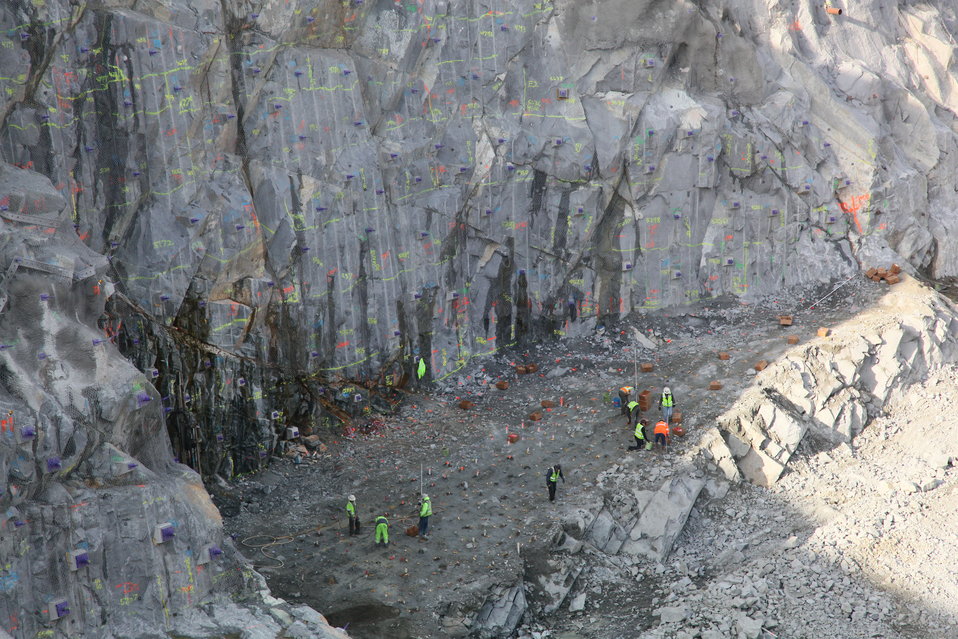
Setting blasts at the Folsom Dam auxiliary spillway

Contractors for the U.S. Army Corps of Engineers Sacramento District set blasts at the excavation site for the Folsom Dam auxiliary spillway in Folsom, Calif., March 23, 2012. Blasting for the shear zone, the spillway’s foundation, is nearing completion. The spillway, scheduled to be ready for use in 2017, will allow Folsom Dam to release water sooner and more safely. The project is part of the Folsom Dam Joint Federal Project, a joint effort of the Sacramento District, the U.S. Bureau of Reclamation, the Central Valley Flood Protection Board and the Sacramento Area Flood Control Agency to improve the safety of the dam and reduce flood risk for the greater Sacramento area.